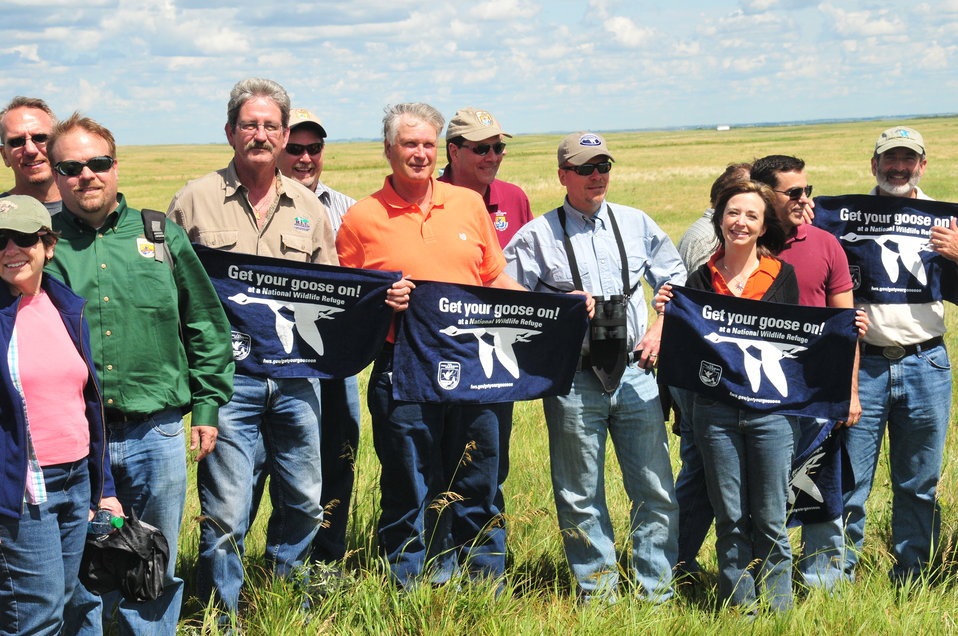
Get Your Goose On!

The national meeting for regional chiefs of the National Wildlife Refuge System is held three times a year in different locations around the country. This 2012 meeting took place in McPherson County, South Dakota, and focused on the Dakota Grassland Conservation Area.

This photo was taken on the Wade Weiszharr and Family Ranch, which contains perpetual U.S. Fish and Widlife grassland and wetland easements. This site is also located in the heart of Prairie Pothole Region, making it extremely productive migratory bird habitat and a great place to “Get your goose on!”

Here is a group shot taken on the Wade Weisszhauer Ranch!